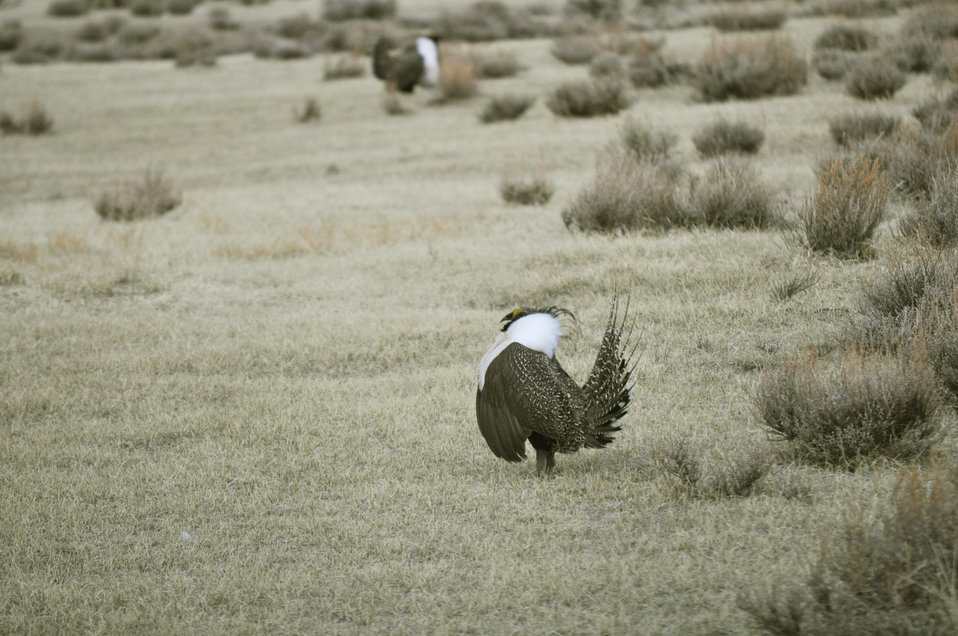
Male greater sage-grouse strut at lek (dancing or mating grounds) to attract females near Bodie, California.